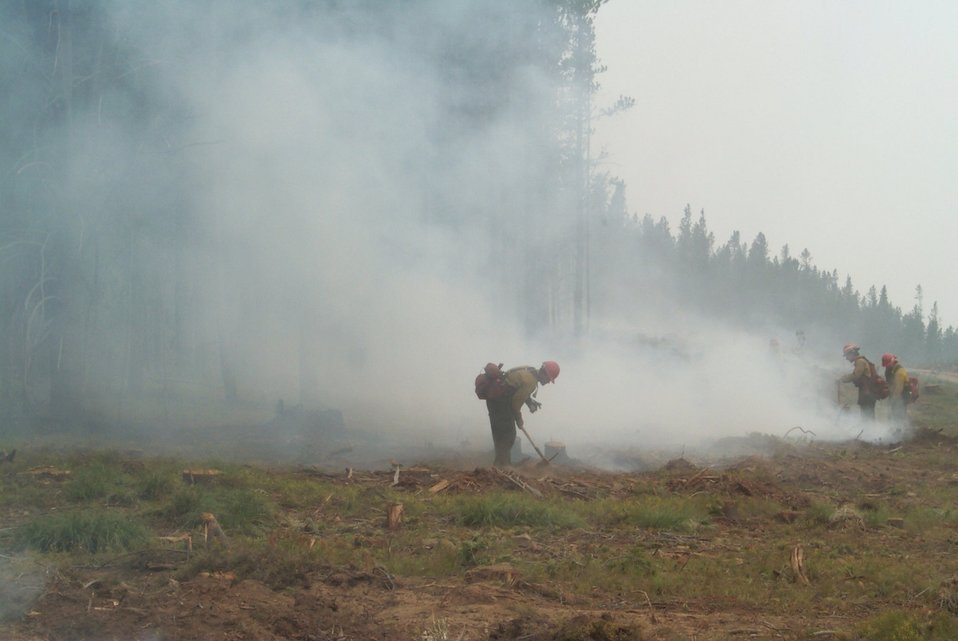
Fire crew Fire Clearwater Fire Salmon Field Office USRD Upper Snake River District